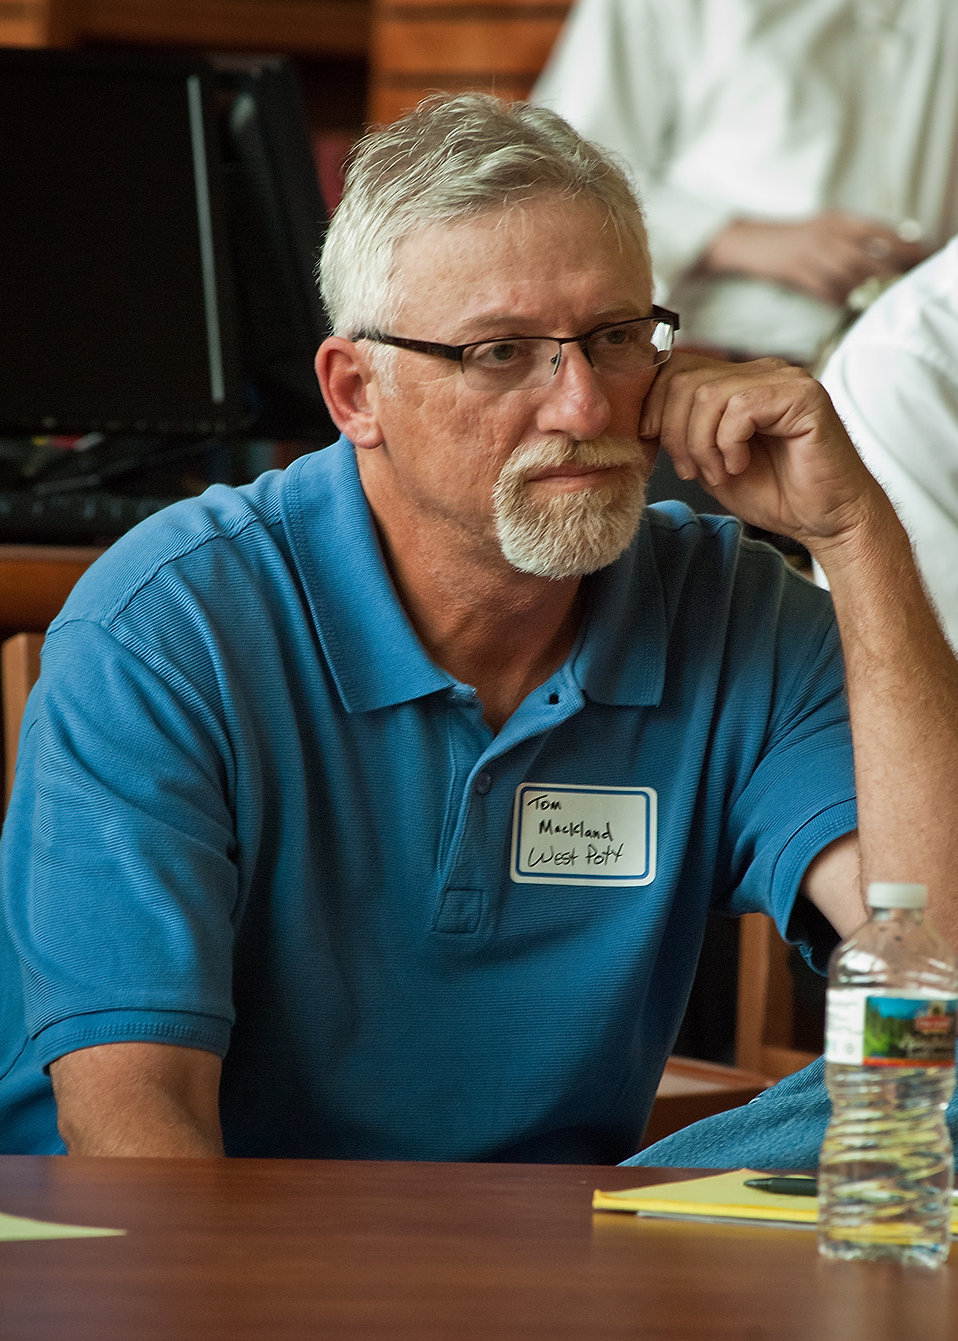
Tom Mackland listens to Agriculture Secretary Tom Vilsack during a town hall meeting at the Glenwood Community High School in Glenwood, Iowa on Thursday, June 16, 2011. Farmers, local and regional media listened and questioned Secretary Vilsack on the cause of the floodwaters along the Missouri River affecting Iowa and Nebraska. Secretary Vilsack offered advice and assistance available through the United States Department of Agriculture and other federal agencies.